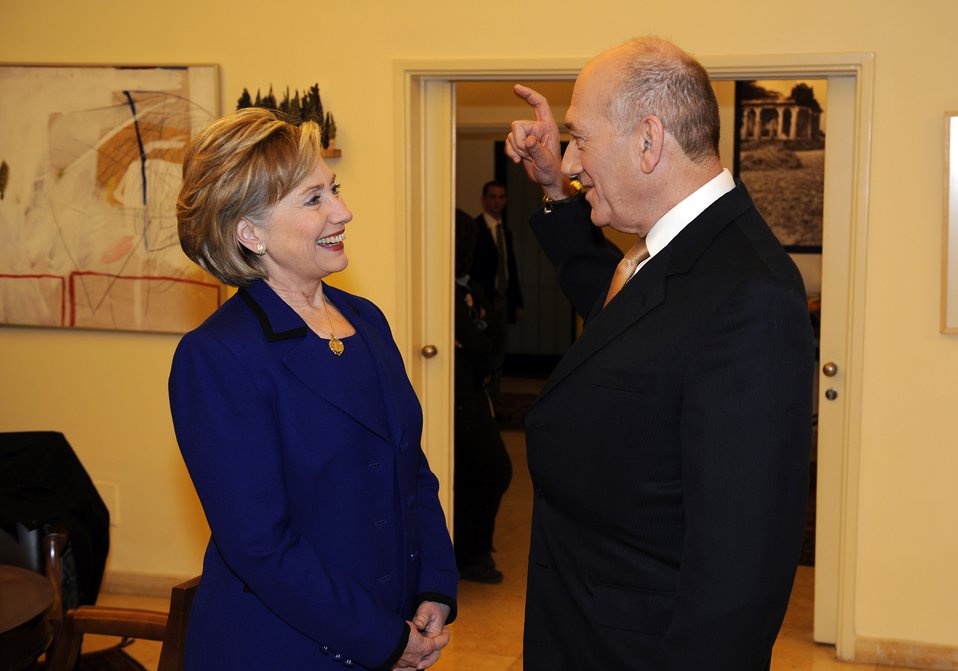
Secretary Clinton Visits Israeli Prime Minister Residence

U.S. Secretary of State Hillary Rodham Clinton during visit to Prime Minister Ehud Olmert's Residence, Jerusalem, March 3, 2009.